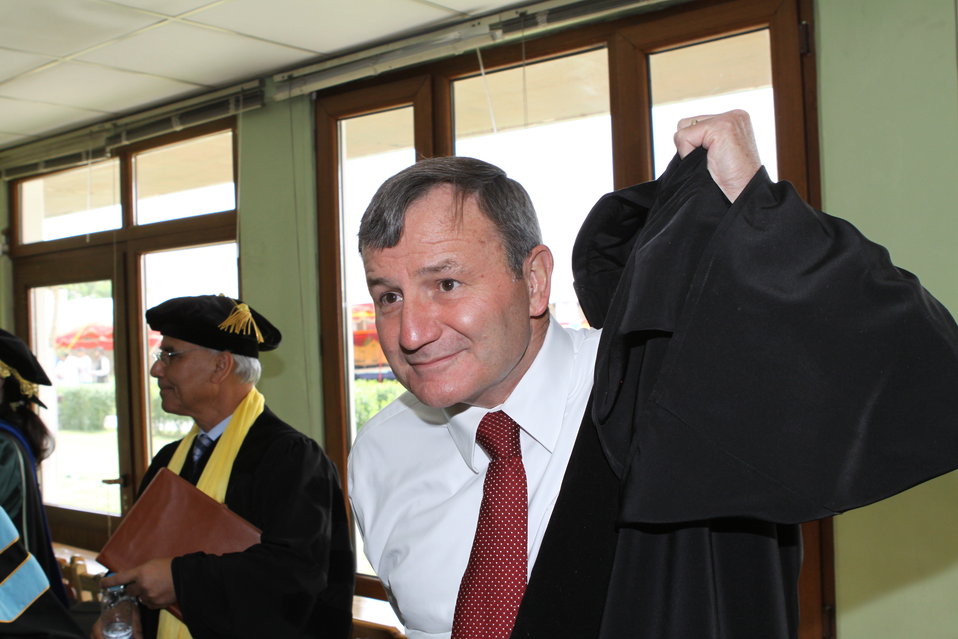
100526 AUAF Graduation 044